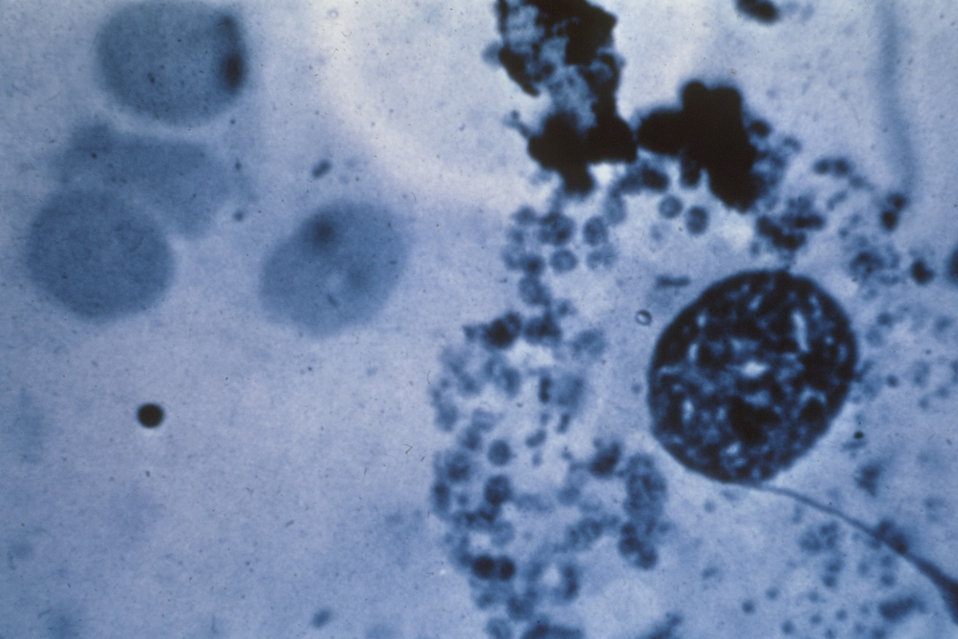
This photomicrograph reveals 'Donovan bodies' in a skin sample used to diagnose granuloma inguinale.